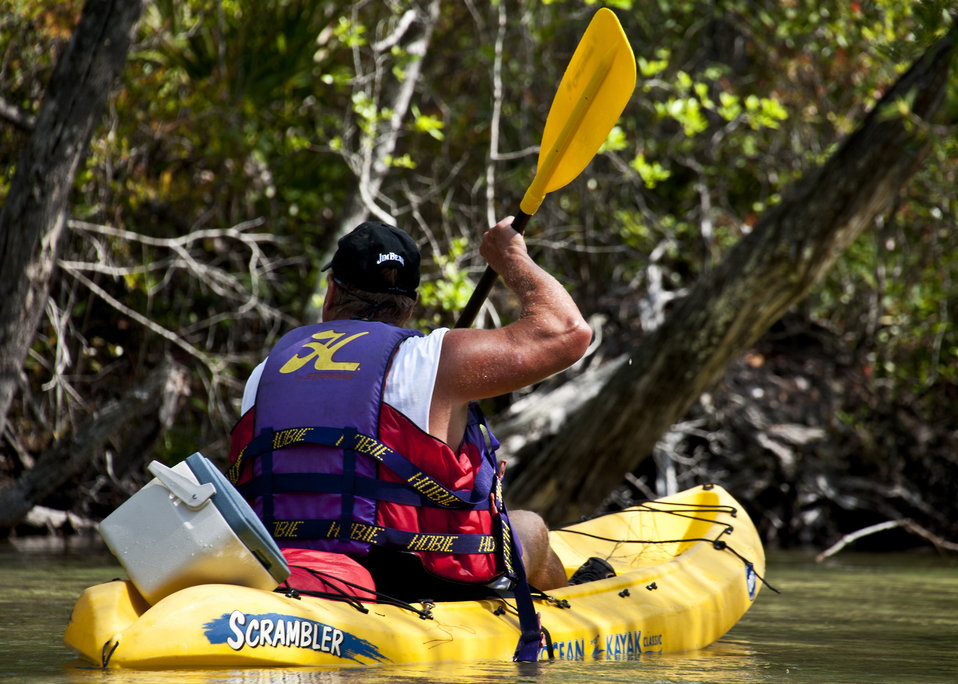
Earth Day Kayak Tour

Mark Westerlund paddles down Turkey Creek April 21, 2011, at Eglin Air Force Base, Fla., during the base's second annual Earth Day kayak tour and celebration. Mr. Westerlund is a member of the 96th Force Support Squadron.